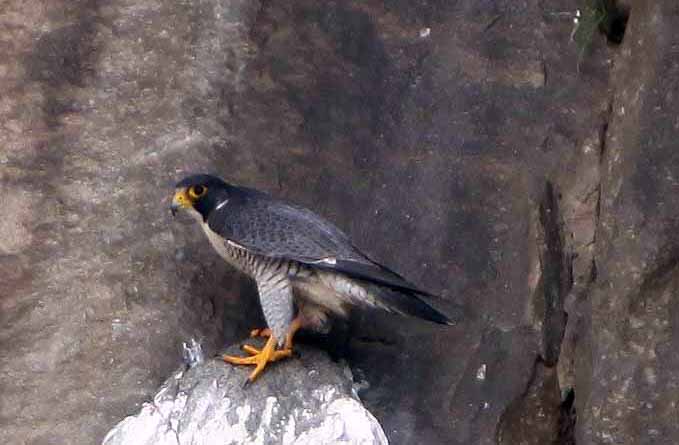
falcon

Peregrine falcons have one of the longest migrations of any North American bird.